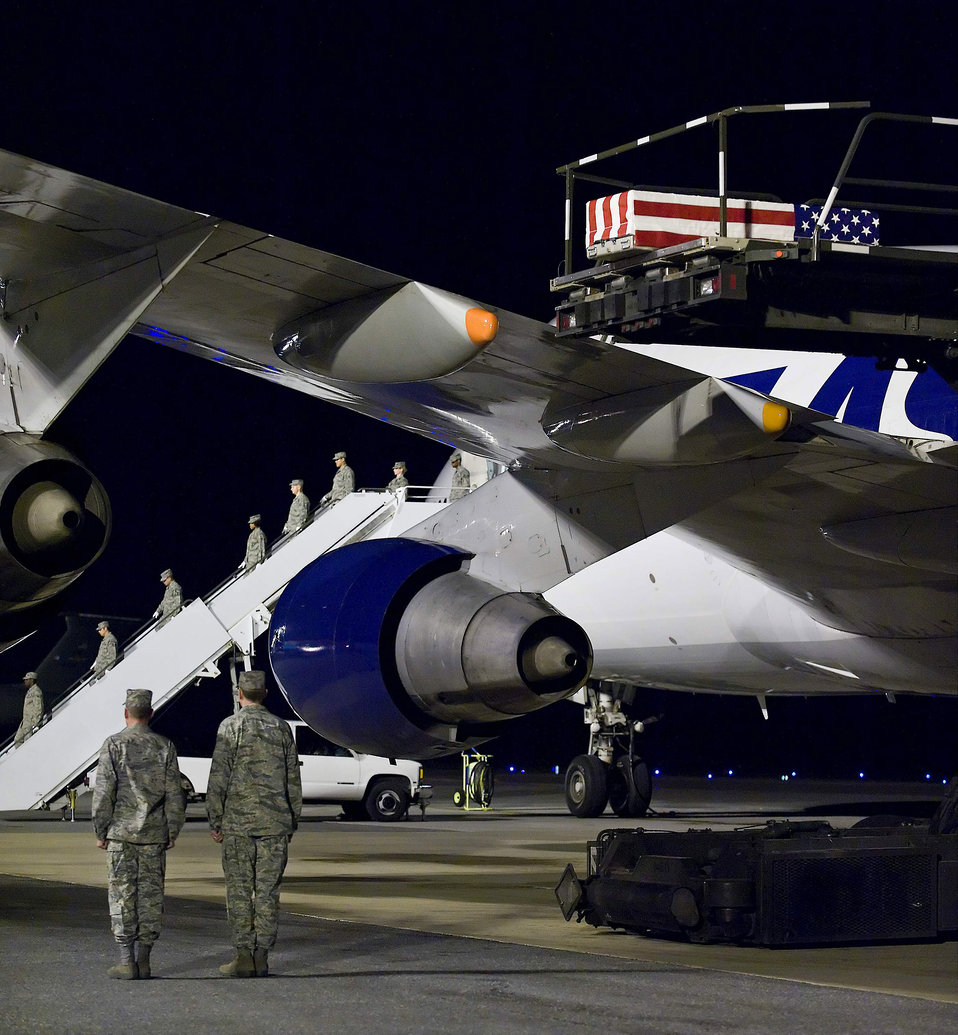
Dignified Transfer

An Air Force Mortuary Affairs Operations Center carry team wait for the remains of Air Force Staff Sgt. Phillip A. Myers, of Hopewell, Va., to be lowered form the aircraft at Dover Air Force Base, Del., April 5. Sergeant Myers died April 4 near Helmand Province, Afghanistan, from wounds suffered from an improvised explosive device. He was assigned to the 48th Civil Engineer Squadron, Royal Air Force Lakenheath, United Kingdom. Sergeant Myers' family is the first to allow media to cover the dignified transfer under the new Department of Defense policy.